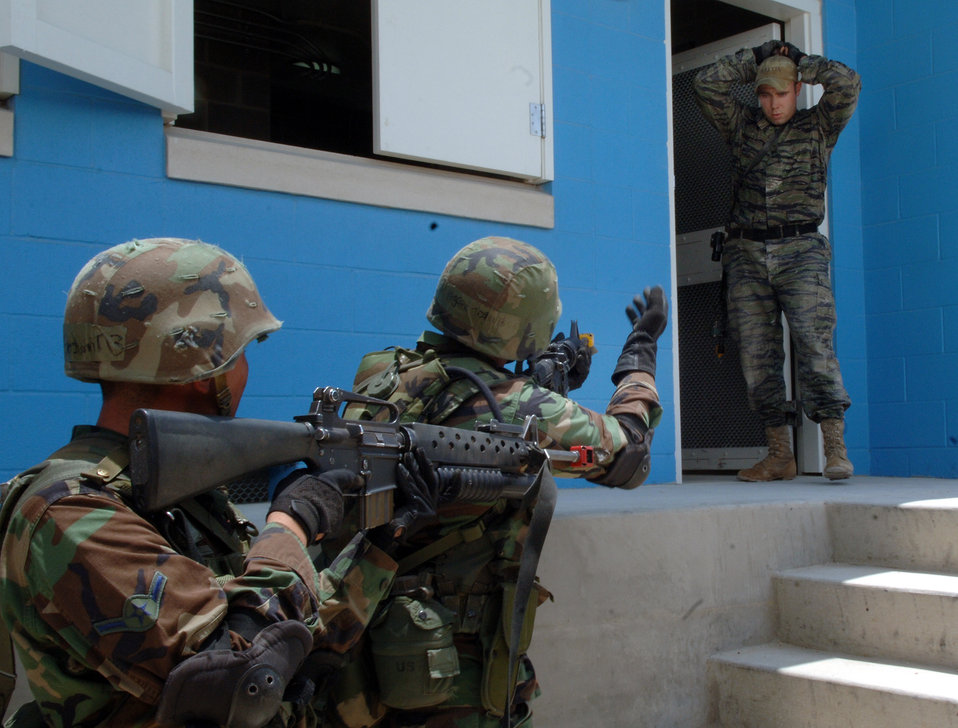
Experience a key training tool at Security Forces Academy

Airmen shout instructions to Staff Sgt. Travis Crawley during a simulated terrorist surrender during training at the Security Forces Academy at Camp Bullis, Texas, on Wednesday, July 19. The 343rd Training Squadron instructs Airmen on air base defense and combat operations. Sergeant Crawley is an instructor for the 343rd TRS.